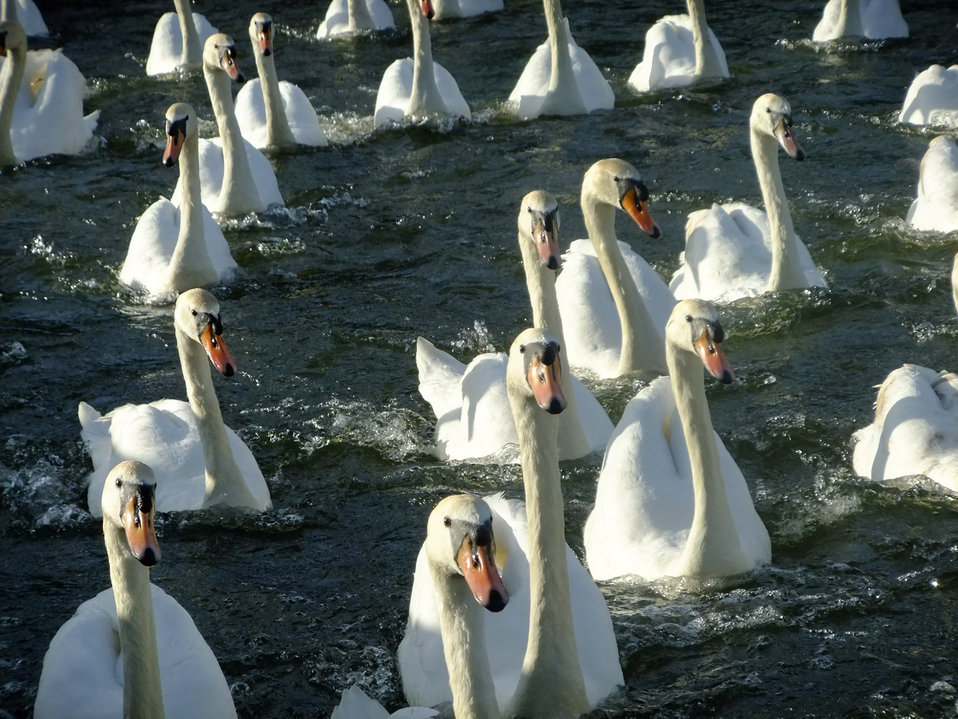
Swans on a river.